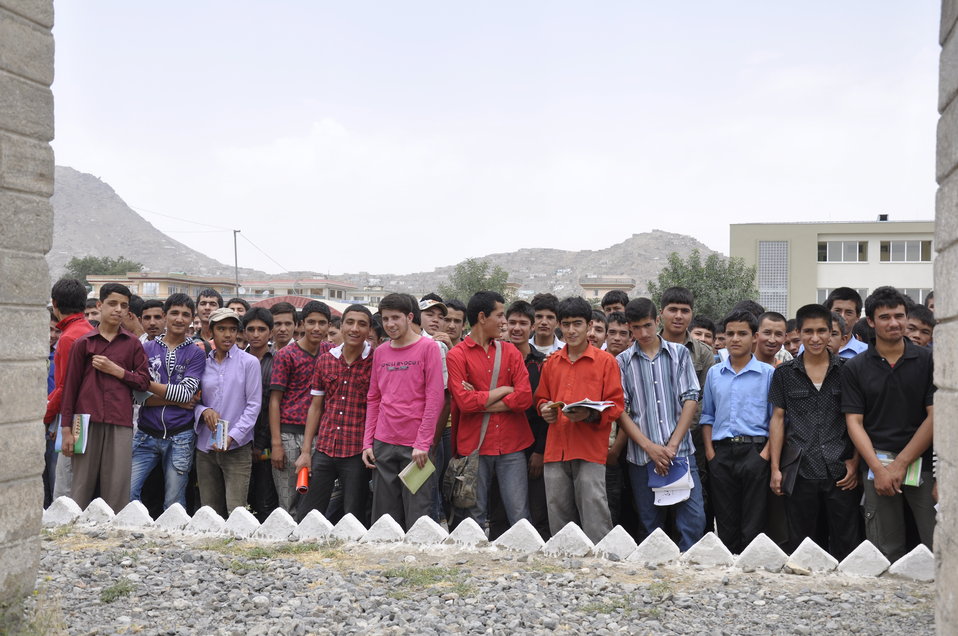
Ghazni High School in Kabul